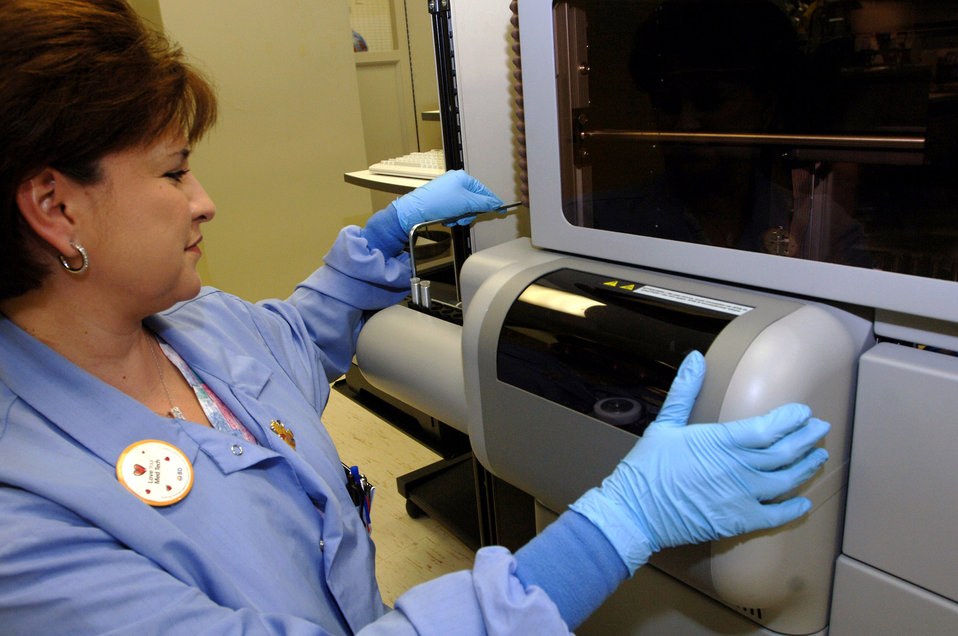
Equipment provides advanced blood testing at Wilford Hall

Carolina Collins loads reagents into the STA-R Evolution Jan. 16 at Wilford Hall Medical Center at Lackland Air Force Base, Texas. The equipment is a new addition to the lab and will increase productivity. The equipment will perform coagulation testing, the process in which blood clotting factors are analyzed, and compliance with therapeutic ranges for anti-coagulants is determined. Ms. Collins is a medical technologist in the 59th Laboratory Squadron.